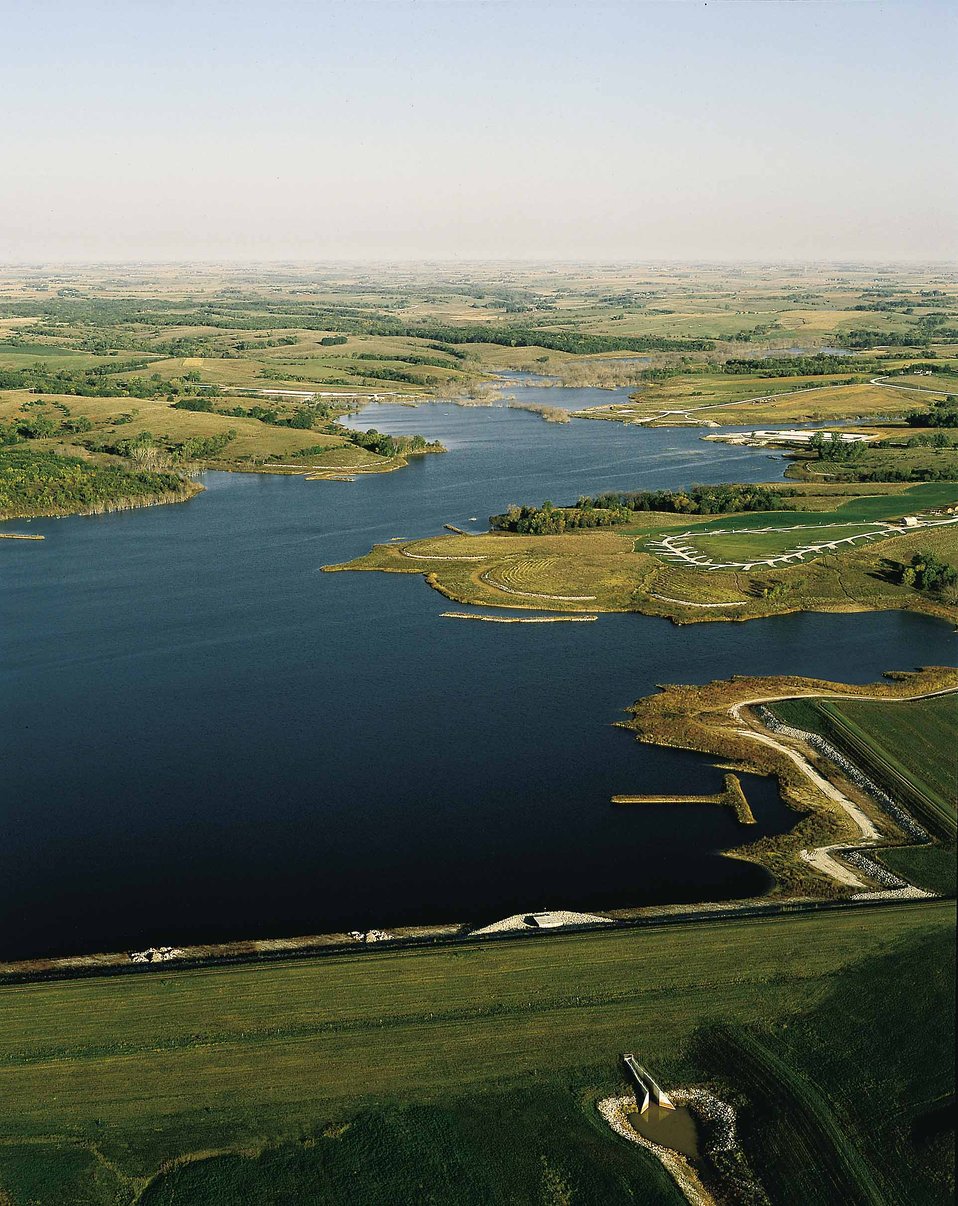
Three Mile Lake in Union County is a lake built as part of the Three Mile Watershed project. The dam provides recreation, water supply, and flood control, and boosts the local economy.